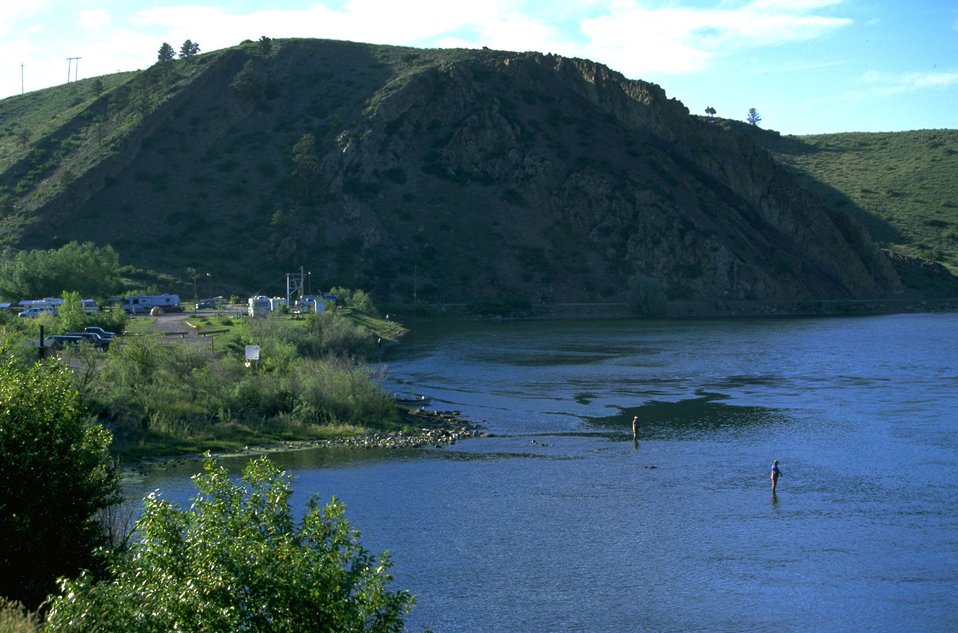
Fly fishing on the Missouri near a campground